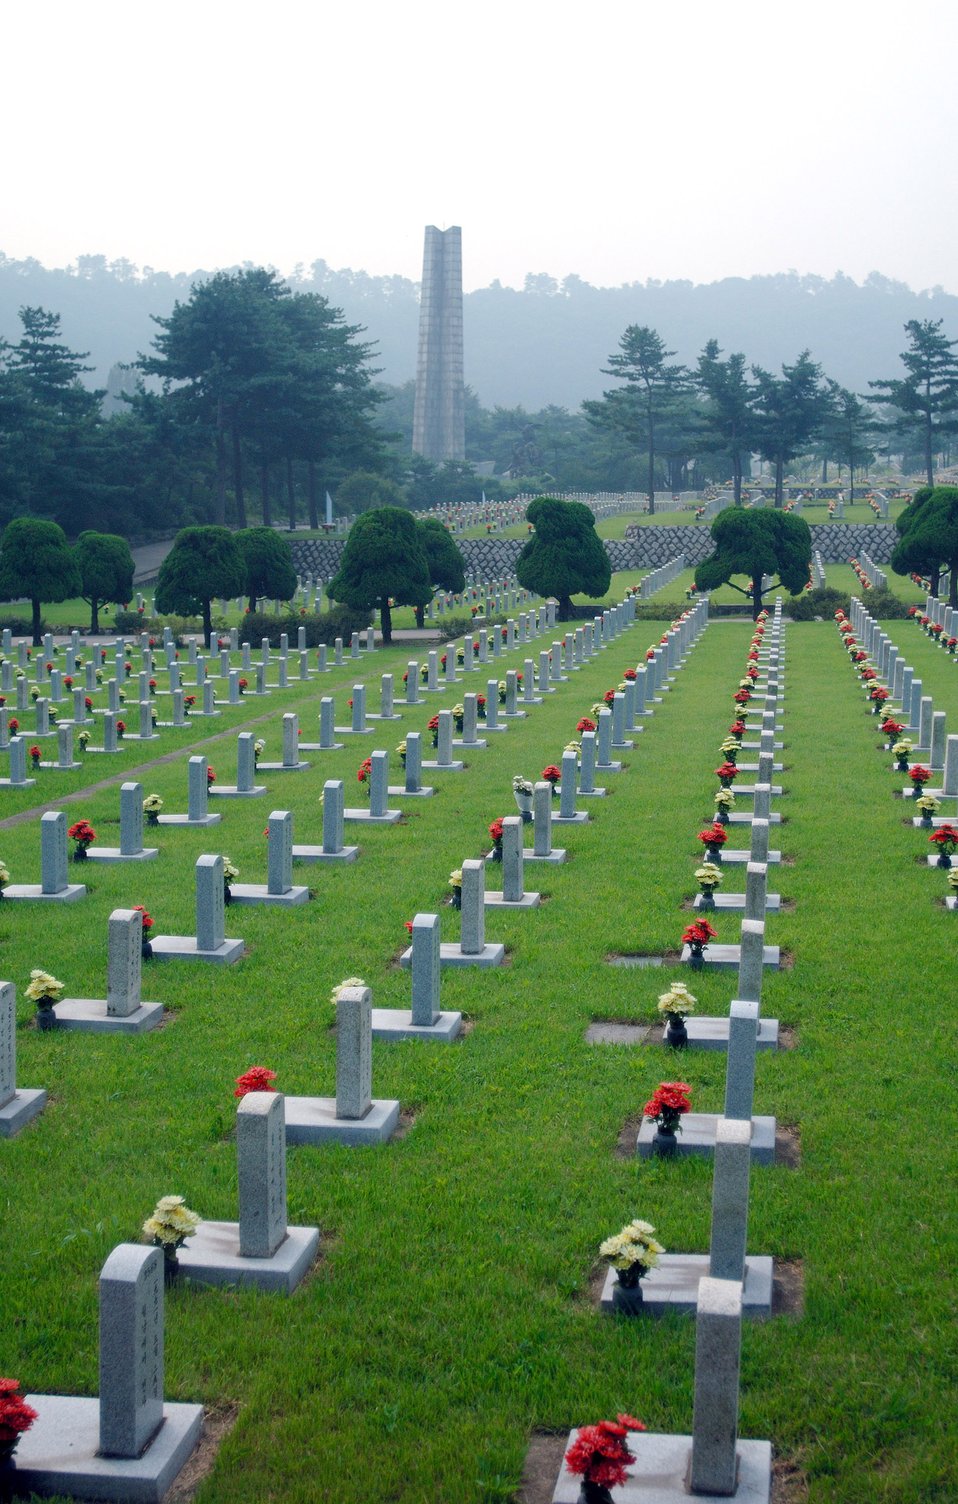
Korean War veterans give sage advice to Airmen

Thousands of Korean War tombstones cover the the South Korean National Ceremony. The South Korean government's Revisit Korea program invites war veterans each year to come to South Korea to honor the men and woman from 21countries who served during the Korean War. Nearly 25,000 veterans have participated in this program since 1975.